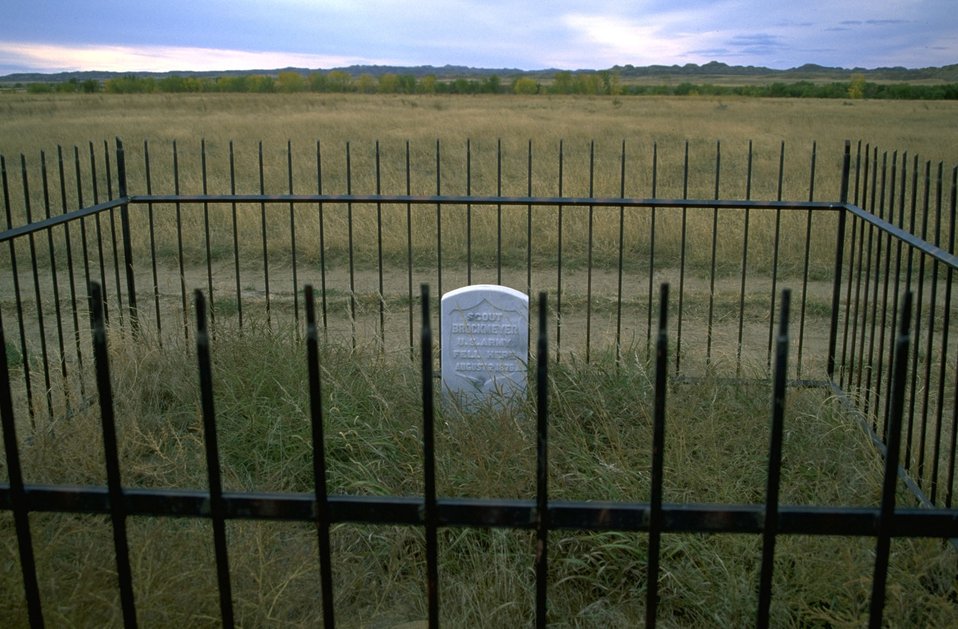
Headstone of Scout Brockmeyer at Powder River Depot